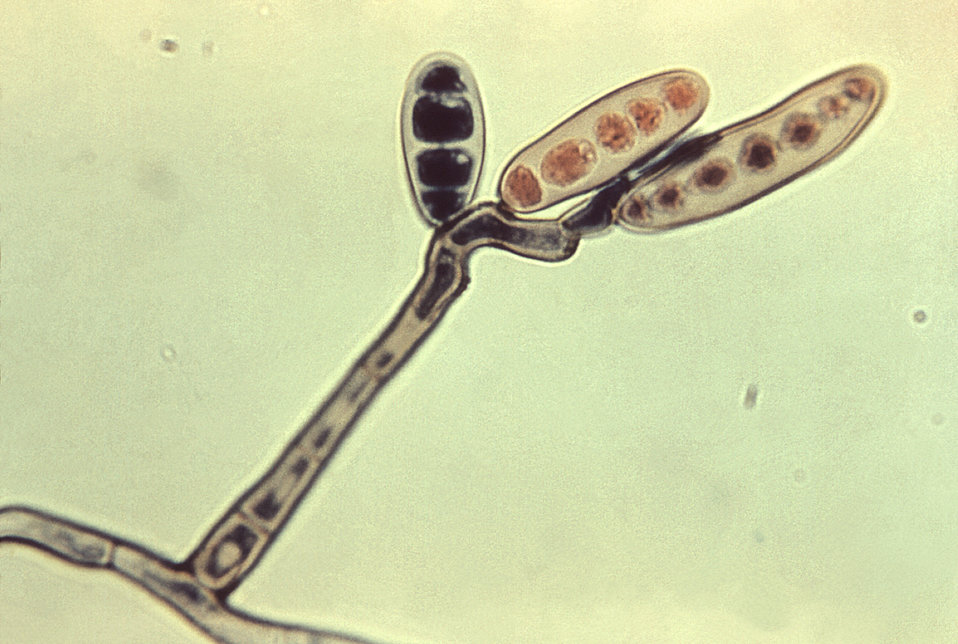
Magnified 970X, this photomicrograph revealed some of the morphologic characteristics displayed by an unknown specie of the dematiaceous, i.e., pigmented, fungus of the genus, Helminthosporium.